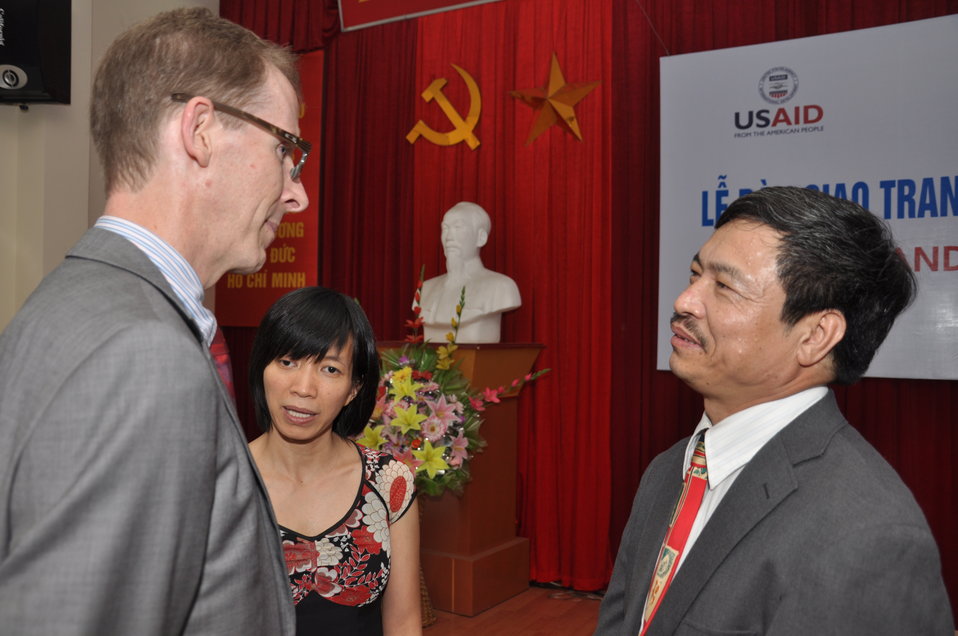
USAID Mission Director Joakim Parker, left, and Director General of Vietnam's Department of Animal Health, Dr. Pham Van Dong at the Protective Gear Handover Ceremony

Handover of personal protective equipment event in Hanoi.